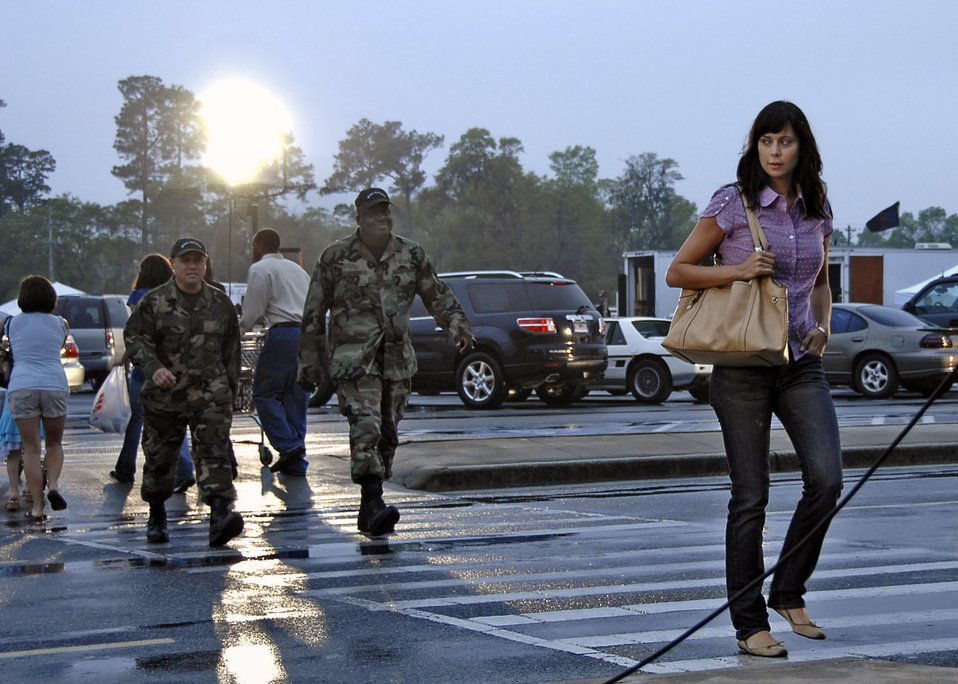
'Army Wives' films on Charleston

Tech. Sgt. Erwin Arguilla and Staff Sgt. Jeffrey Graham follow Catherine Bell while filming a scene for an upcoming episode of